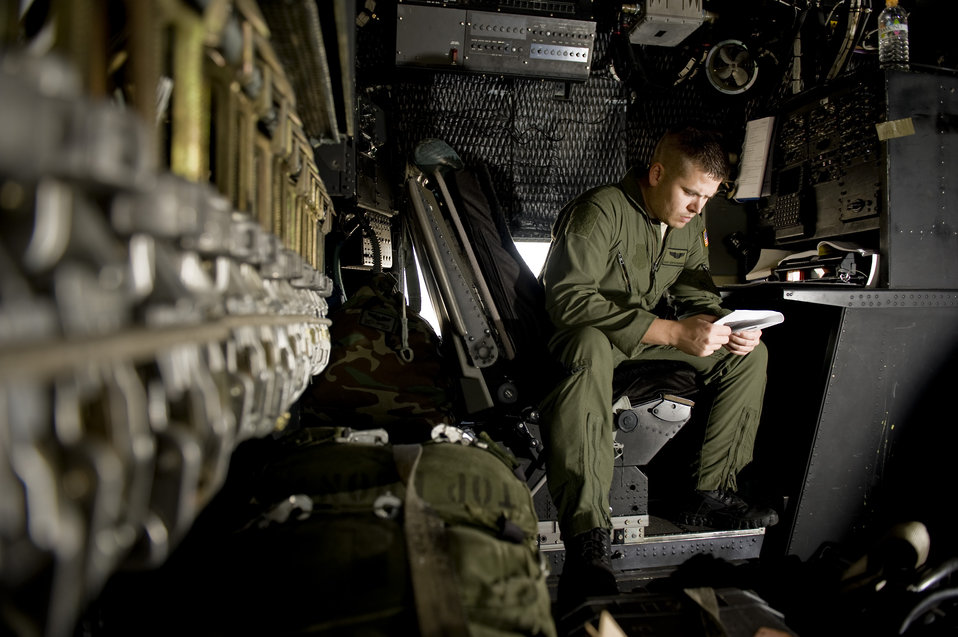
Delivering supplies

Staff Sgt. Curtis Hornbeak reviews a flight operations guide aboard an aircraft March 16, 2011, at Kadena Air Base, Japan, prior to departing for Sendai Airport, Japan. Sergeant Hornbeak is assigned to the 353rd Special Operations Group.